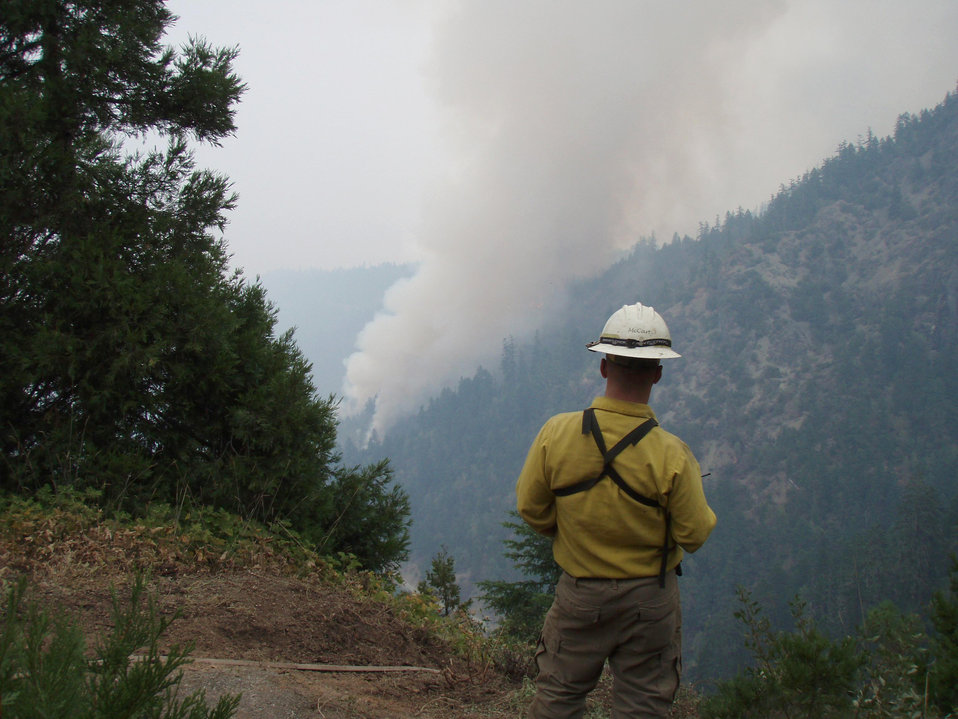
A firefighter keeps a close watch on the actions of the Brimstone Fire in Oregon. The Brimstone Fire near Merton, OR began on Jul. 26, 2013 began by lightning consumed 2,372 acres and is 100% contained.